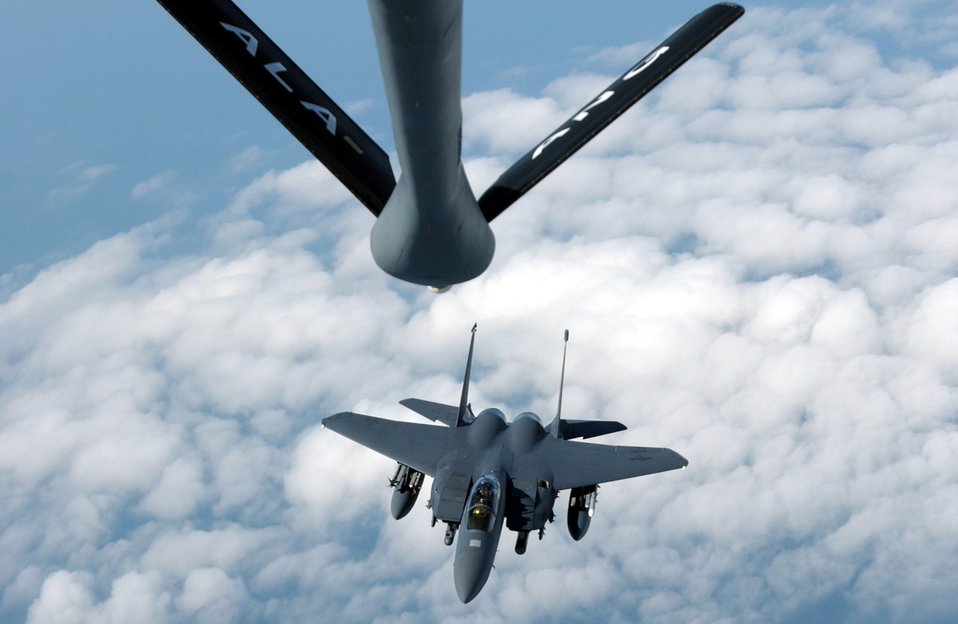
Moving in for fueling

OVER THE NORTH SEA -- An F-15E Strike Eagle from the 494th Fighter Squadron at Royal Air Force Lakenheath, England, approaches the refueling boom of a KC-135 Stratotanker from the Birmingham Air National Guard's 106th Air Refueling Squadron during a training mission here July 19.